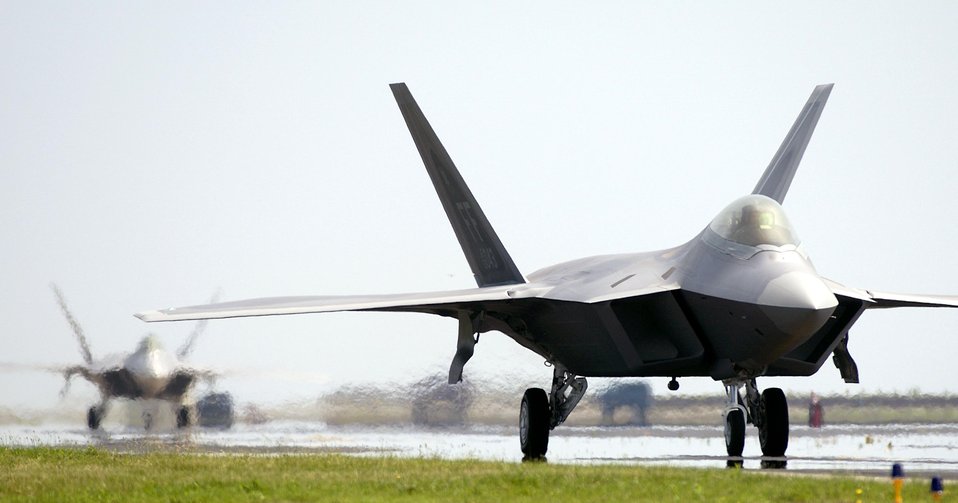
Two more Raptors arrive at Langley

LANGLEY AIR FORCE BASE, Va. -- Lt. Col. Wade Tolliver delivers the second permanent F/A-22 Raptor here June 8. Shortly after, Maj. Charles Corcoran delivered the base's third Raptor. Colonel Tolliver is the 27th Fighter Squadron director of operations, and Major Corcoran is a pilot with the squadron.